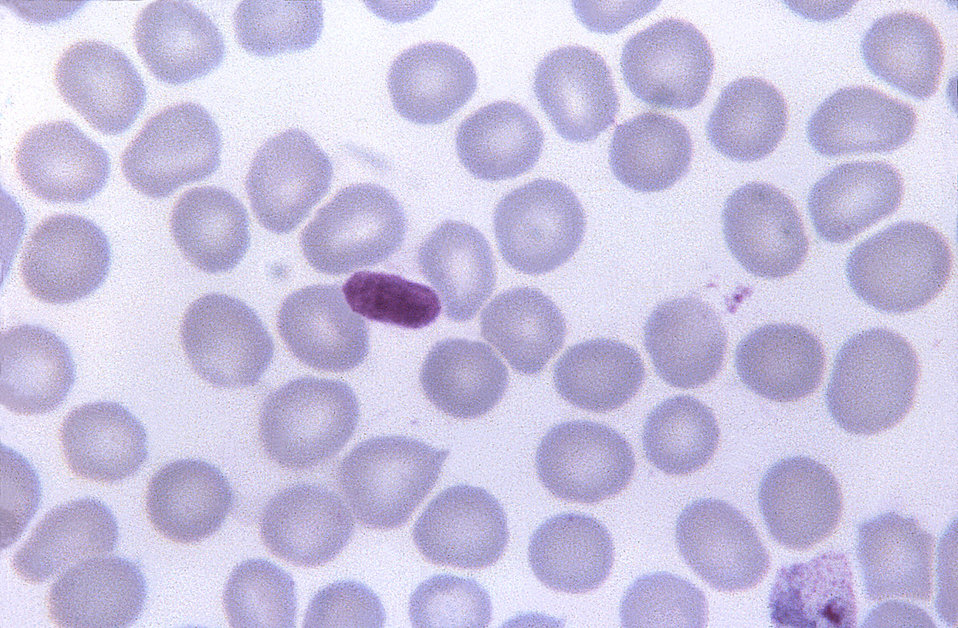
This thin film Giemsa stained micrograph depicts a platelet artifact that could be mistaken for a malaria parasite.